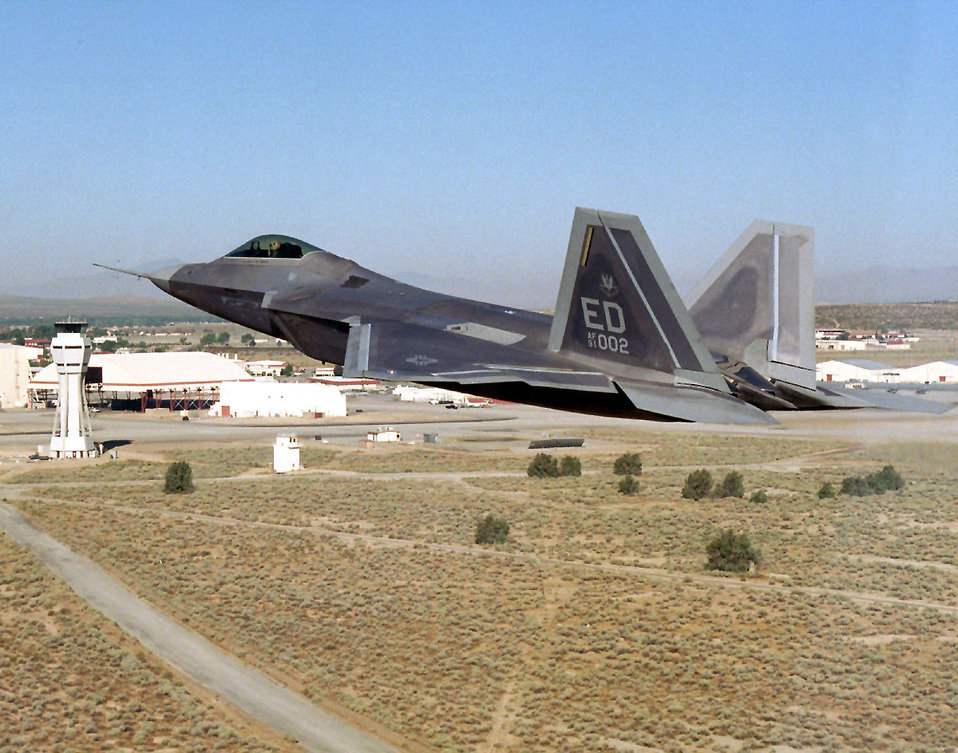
Low pass

EDWARDS AIR FORCE BASE, Calif. -- An F/A-22 Raptor makes a low pass here. The Air Force's new air superiority fighter will dominate the future air combat arena by integrating advanced avionics, stealth and supercruise. It is the most advanced fighter aircraft in the world, combining a revolutionary leap in technology and capability with reduced support requirements and maintenance costs.